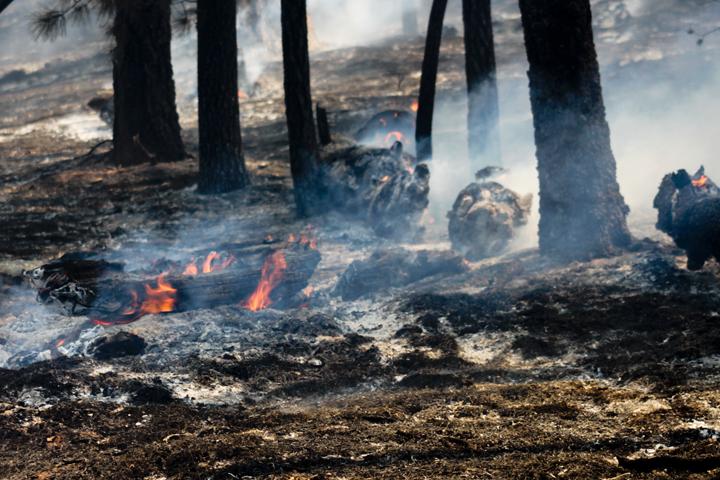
The Silver Fire in Gila National Forest near Kingston, NM began on Jun. 7, 2013 by a lightning strike burned an estimated 44, 600 acres.